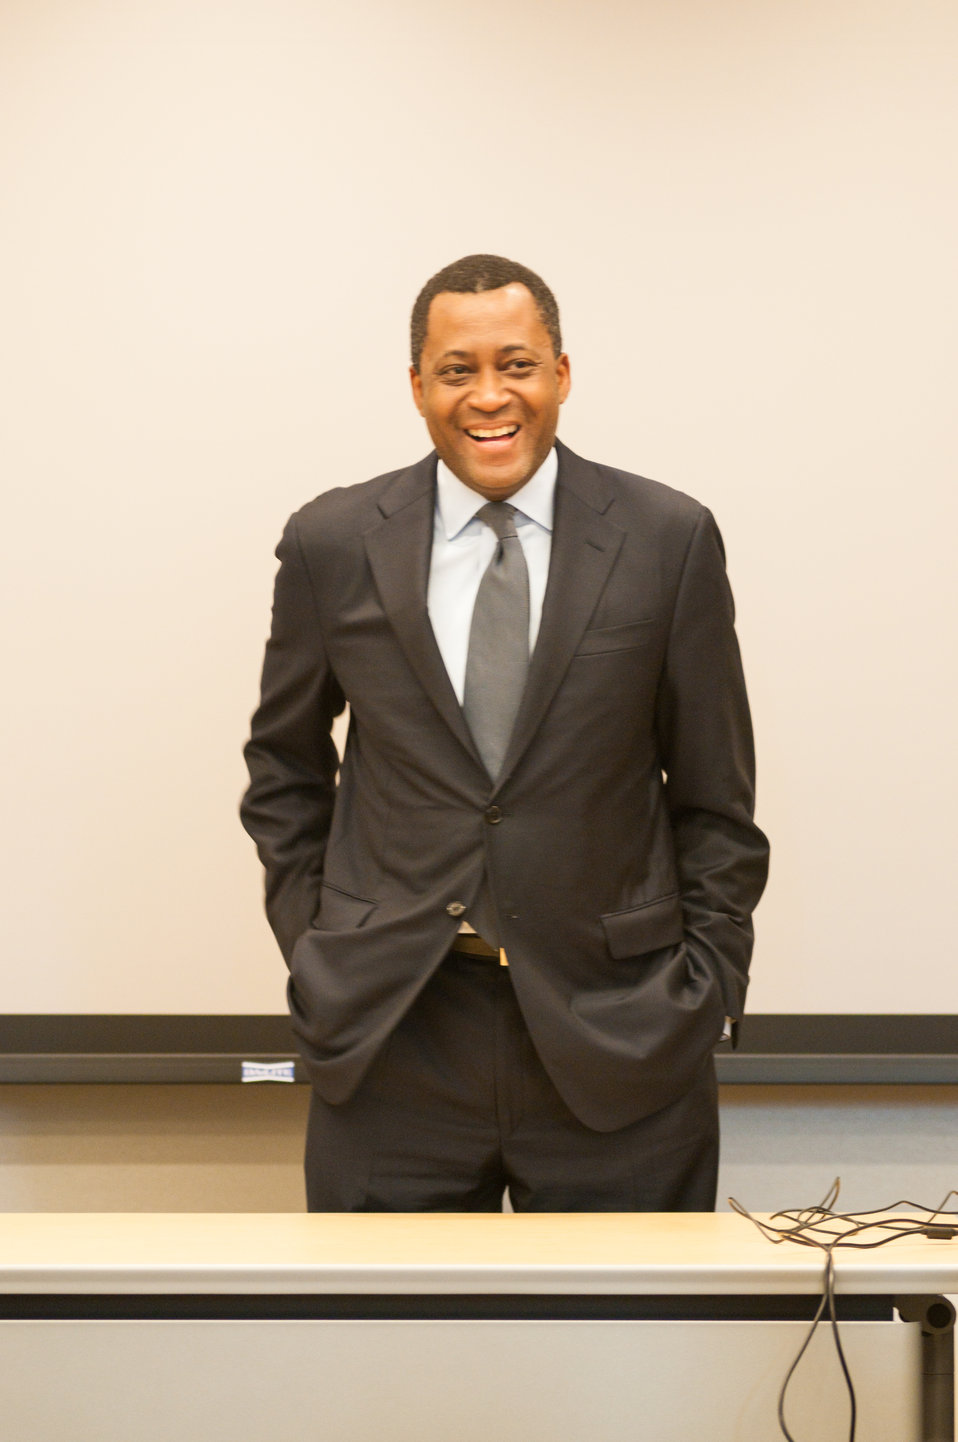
U.S. Department of Agriculture (USDA) Assistant Secretary for Civil Rights Dr. Joe Leonard, Jr. discusses USDA’s Civil Rights efforts to level the playing field to ensure that all groups have equal access to federal resources at the USDA 2013 Land-Grant Development Tribal Fellows Program held in Washington, D.C. on Monday, Jun. 03, 2013.